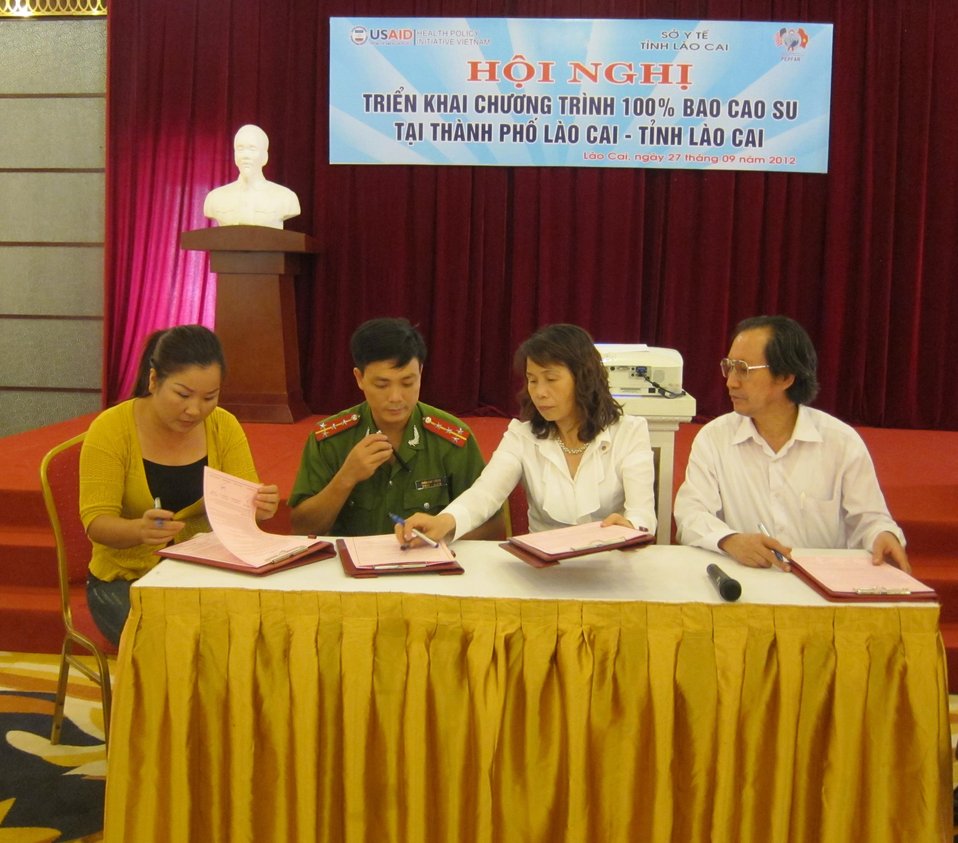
100% Condom Launch in Lao Cai

Representatives of the provincial police, AIDS Control Center, health centers and owners of entertainment and lodging establishments sign a letter of commitment to the campaign.